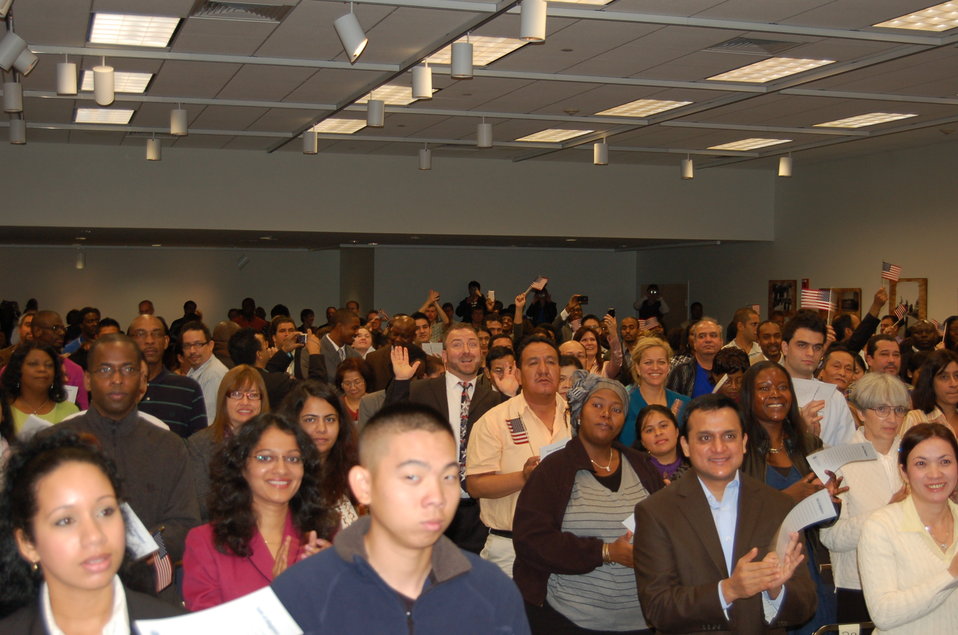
Naturalization Ceremony